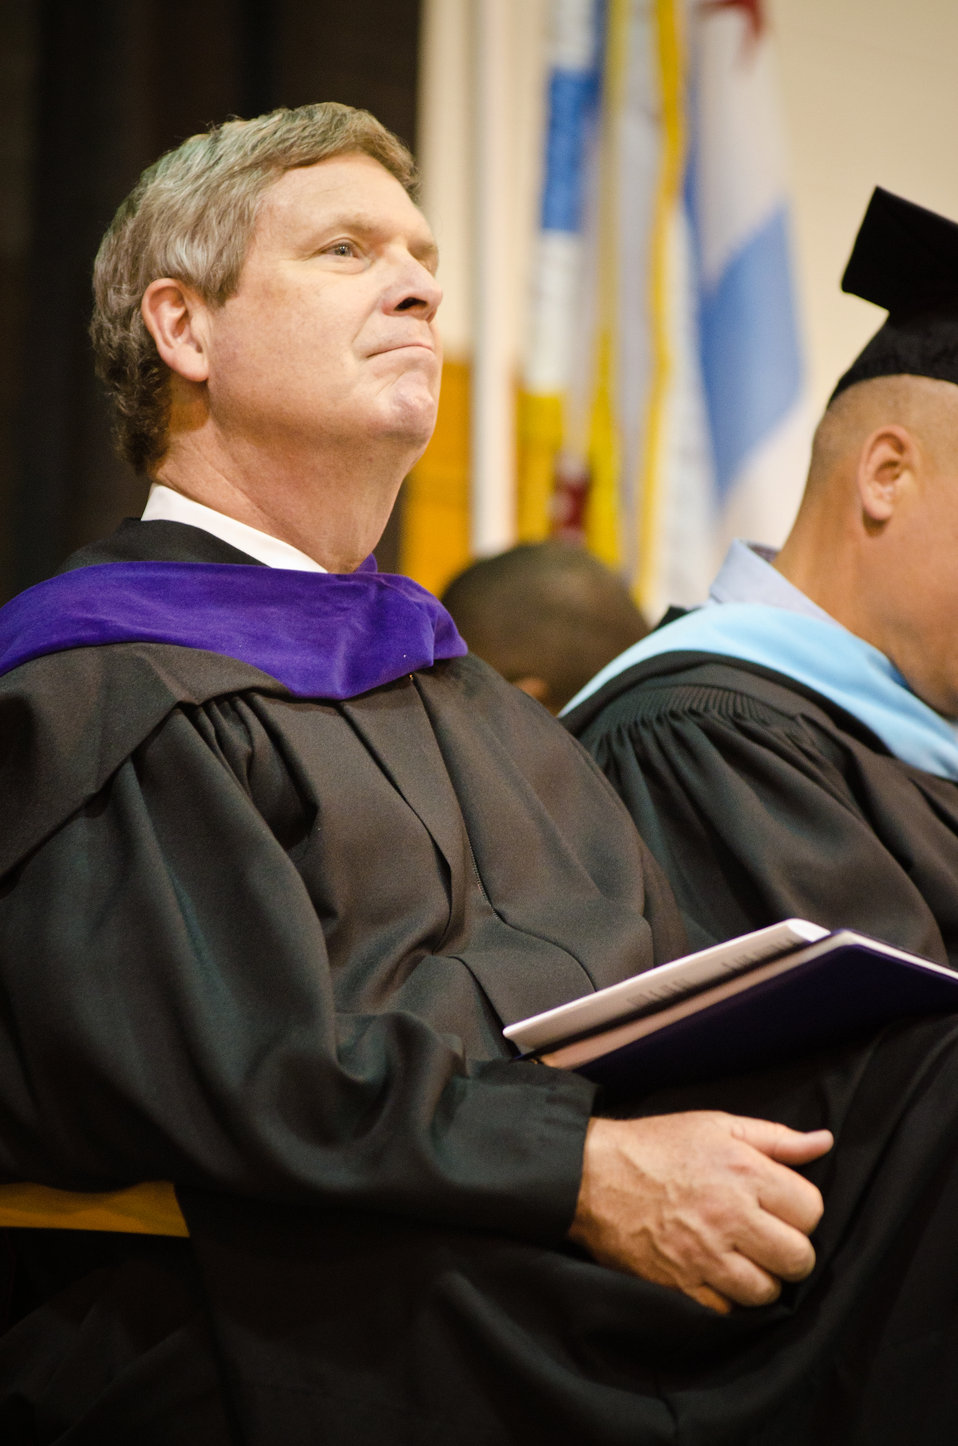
Agriculture Secretary Tom Vilsack listens to Valedictorian Stephanie Markham deliver her address to the 2012 graduating class at the Chicago High School for Agricultural Sciences in Chicago, Illinois on Friday, June 8, 2012. Secretary Vilsack gave the commencement address. During his speech Secretary Vilsack discussed innovation in the food and agricultural industries and the importance of the American agriculture sector in expanding economic opportunity and creating jobs in communities throughout the country.